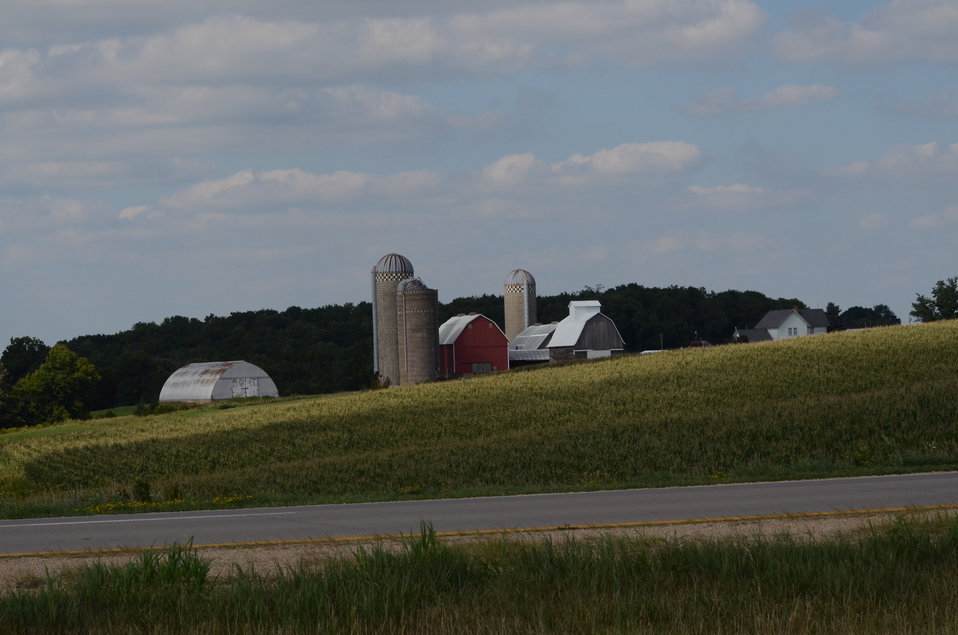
Dairy Farm near Poesta, IA, on Tuesday, Aug. 16, 2011.